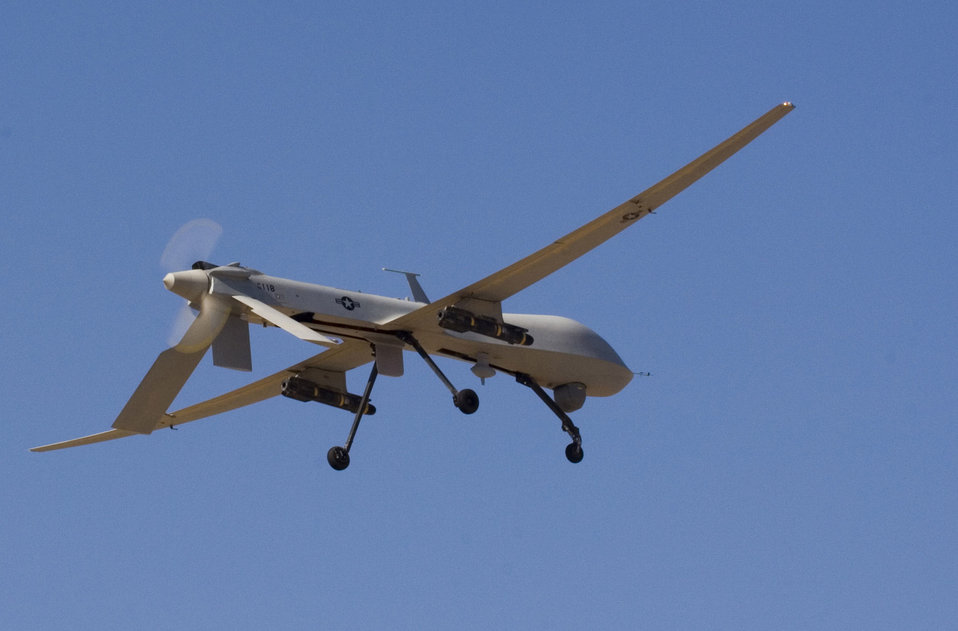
UAVs return from successful missions

An MQ-1 Predator with the 46th Expeditionary Reconnaissance and Attack Squadron prepares to land at Joint Base Balad, Iraq, after a mission Nov. 8. Predators provide armed intelligence, surveillance and reconnaissance capabilities for ground force commanders.